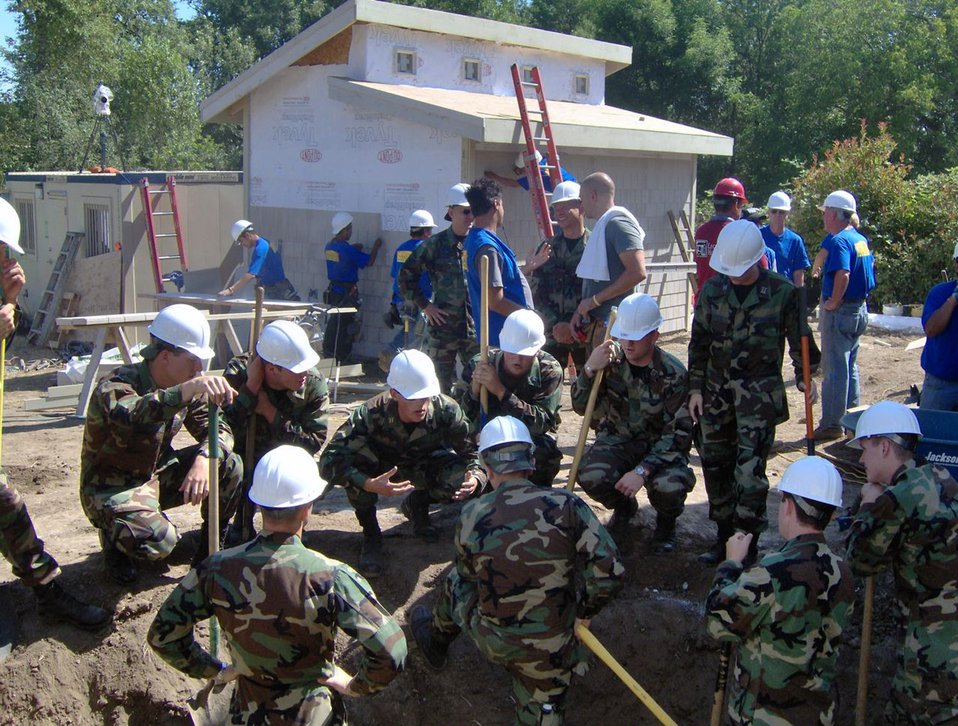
Oregon ROTC cadets go to the extreme

Cadets from ROTC Det. 695 of the University of Portland and Det. 685 from Oregon State University receive instructions July 26 while digging the Koi pond for the Byer family of Lewisburg, Ore. The cadets were some of the volunteers who helped the family featured on ABC's